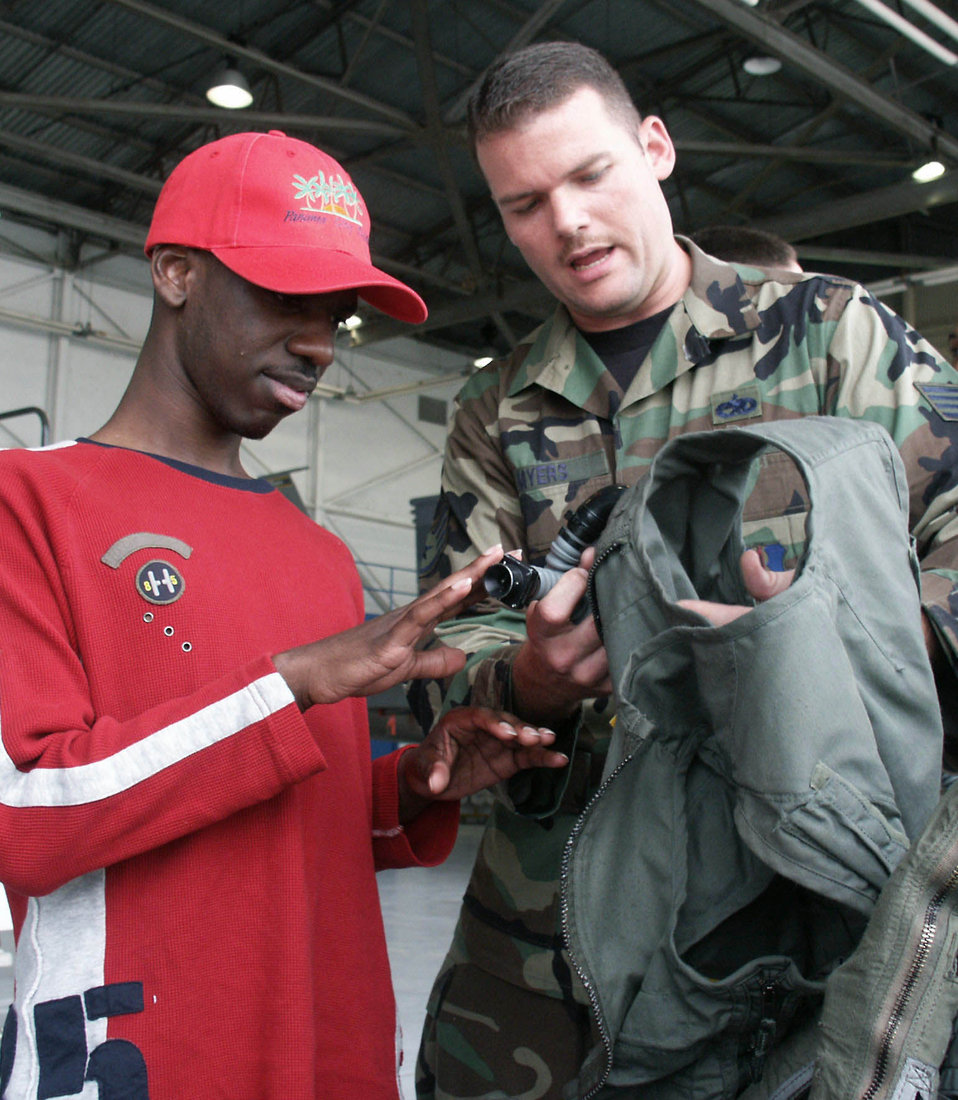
Tour group gets feel for Air Force mission

EGLIN AIR FORCE BASE, Fla. -- Staff Sgt. Tracy Myers lets Joseph Dorsey touch flight equipment during his senior class' tour of the 33rd Fighter Wing here April 26. The class is from the Tennessee School for the Blind in Nashville. Sergeant Myers is an instructor with the 33rd Maintenance Operations Squadron.